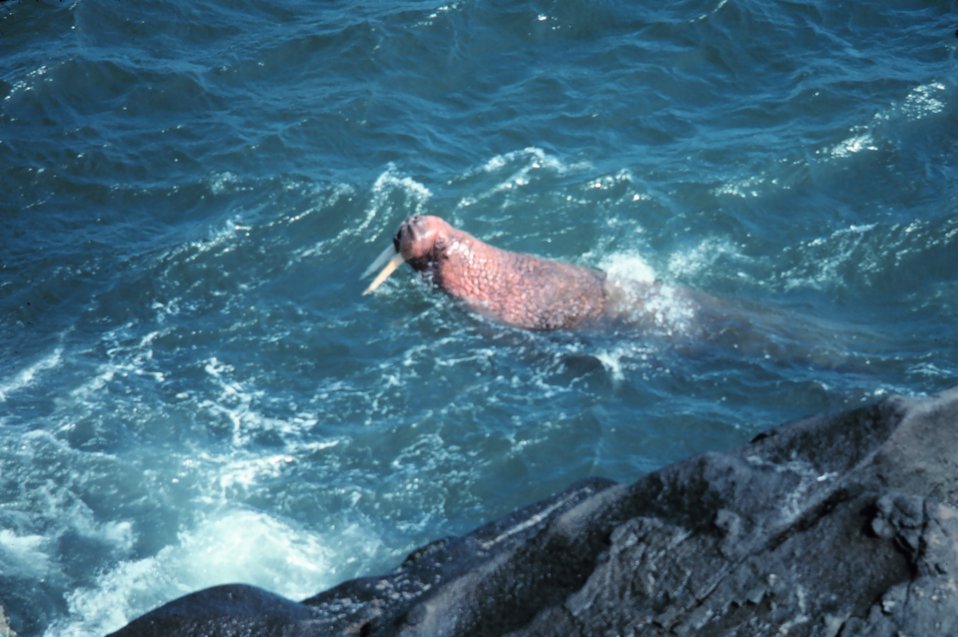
Walrus - Odobenus rosmarus divergens - swimming close to shore.